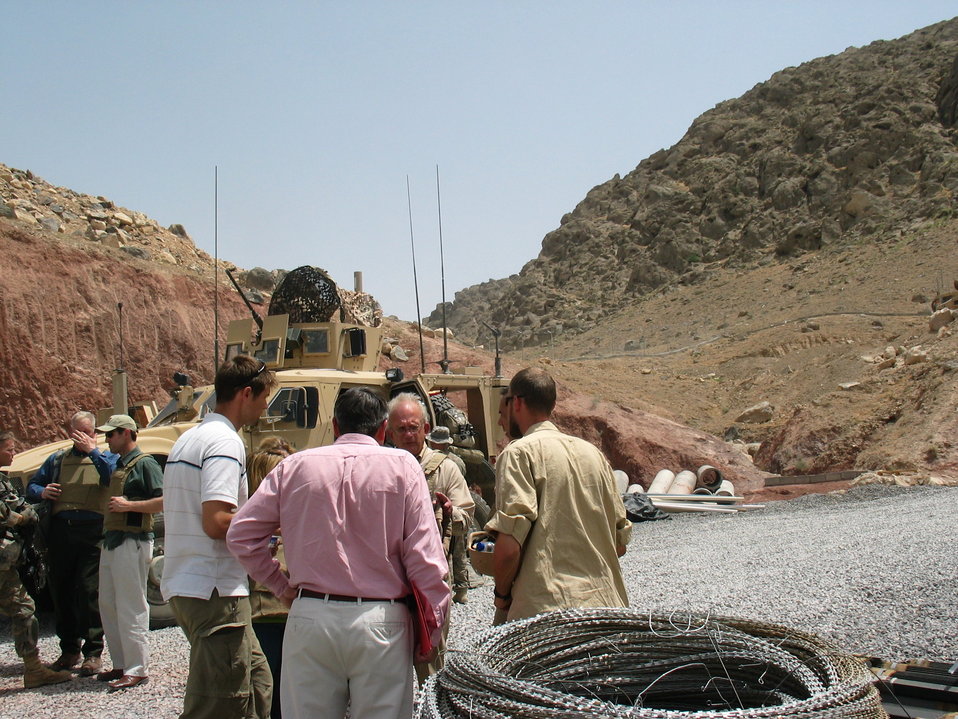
CODEL Berman